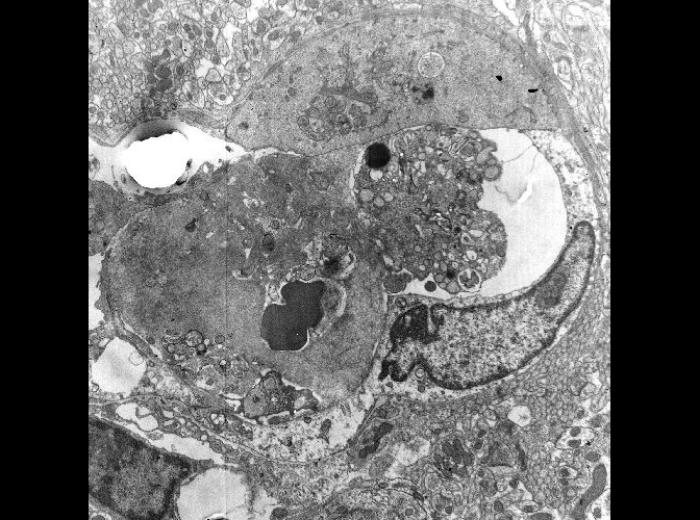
Thrombus due to infection with Rickettsia tsutsugamushi, mouse brain capillary.